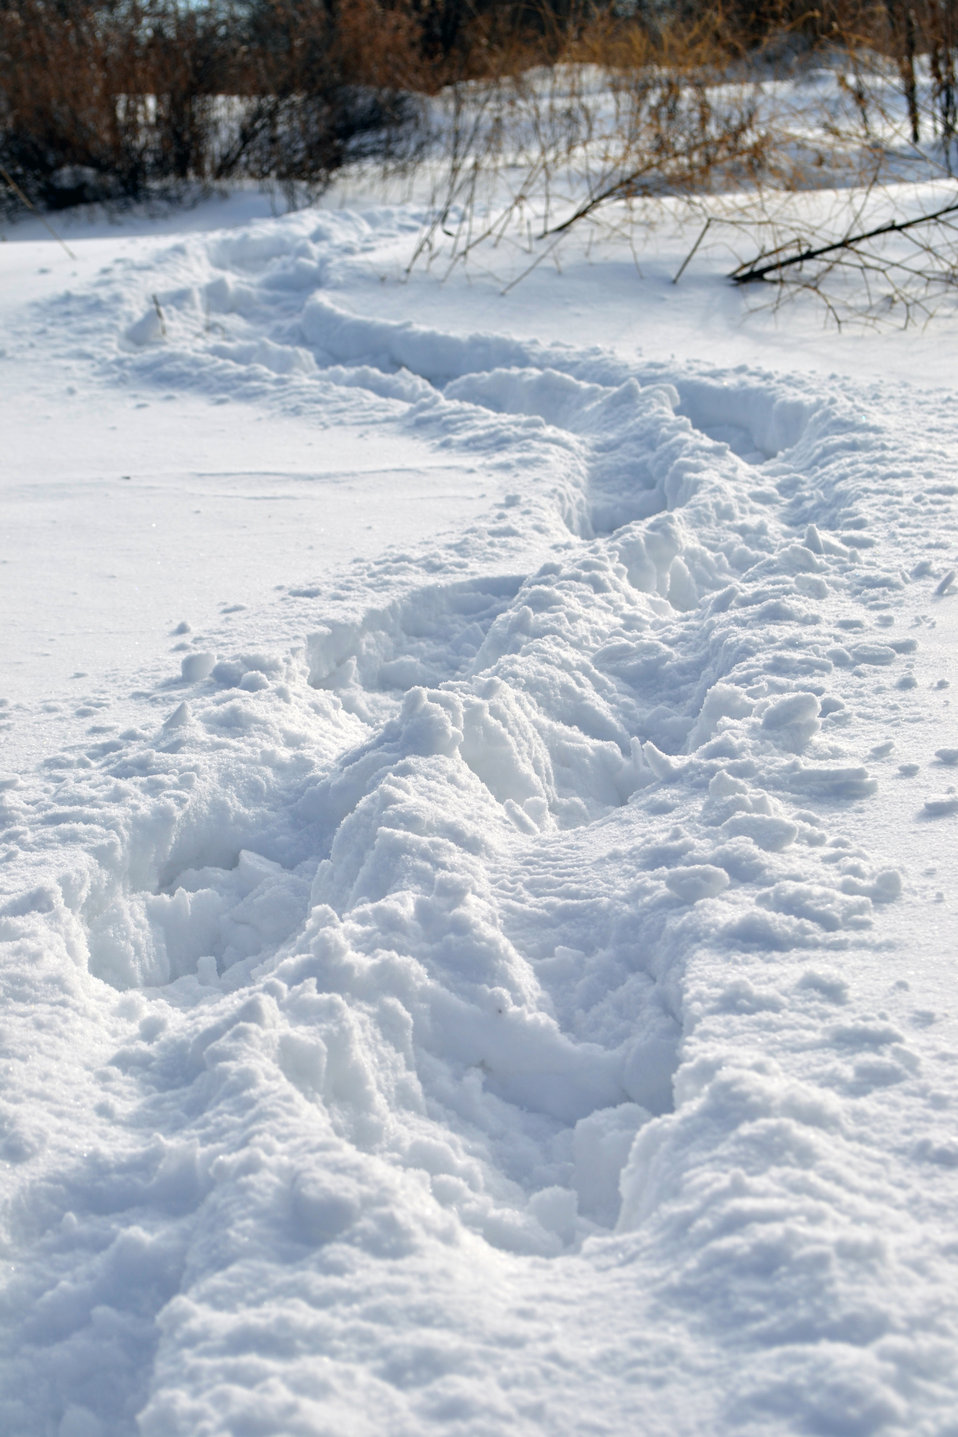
Making Tracks